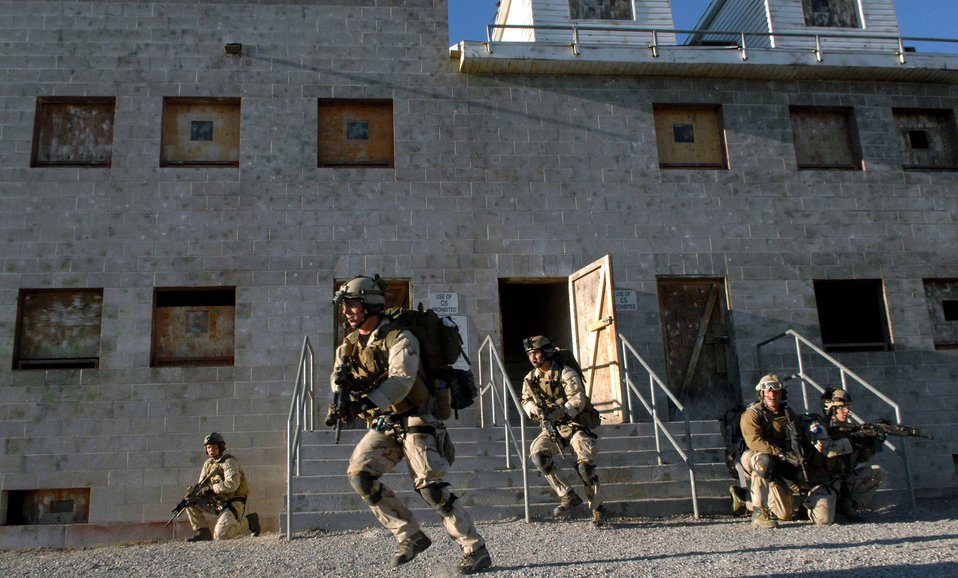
Combat search and rescue training in Utah

Pararescuemen make an urban village assault during an extraction of a simulated downed pilot during a combat search and rescue integration exercise Nov. 8 at Camp Williams, Utah. The pararescuemen are from the 58th Rescue Squadron, Nellis Air Force Base, Nev. Members of the 34th Weapons Squadron from Nellis AFB led the search and recovery training. The exercise expanded the integration with Utah's 211th Aviation Group AH-64 Apache Joint Rotary Wing, 4th Fighter Squadron F-16 Fighting Falcon assets from Hill AFB, Utah, and special operations forces. Exercise participants also conducted extensive joint combat search and rescue operations against surface-to-air threats. The exercise is being run held Nov. 6 through 15.